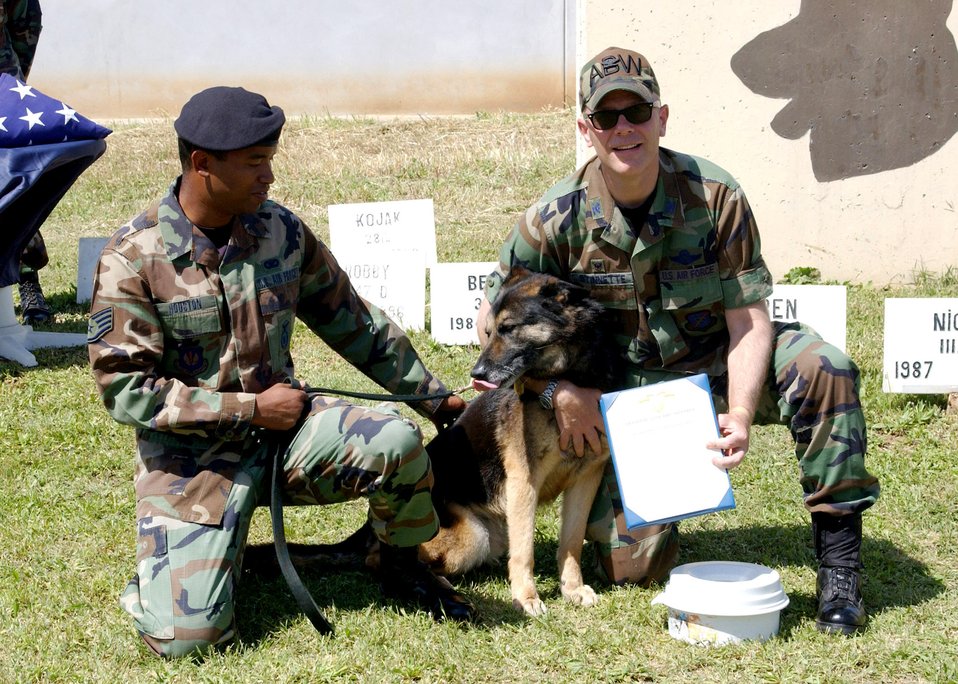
Ceremony recognizes military working dog's service

Col.